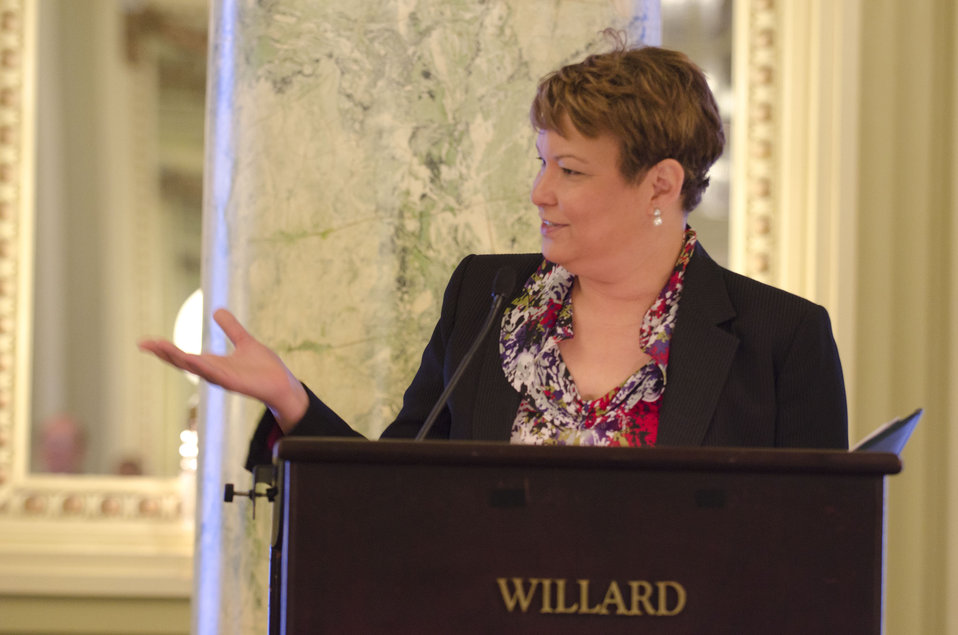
2011-05-05 NRCCCPrayerBreakfast 041

US EPA Administrator Lisa P Jackson addresses the guests after accepting the Steward of God's Creation Award from the National Religious Coalition on Creation Care.